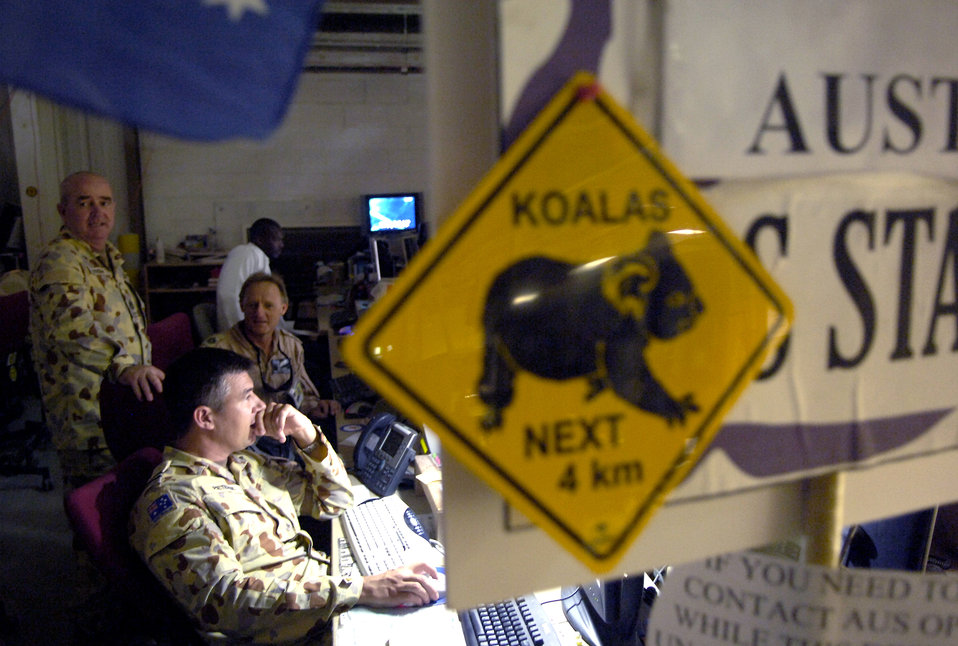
Command and control a 24/7 operation

Airmen of the Royal Australian Air Force work at the Combined Air Operations Center in Southwest Asia on Thursday, June 1, 2006.